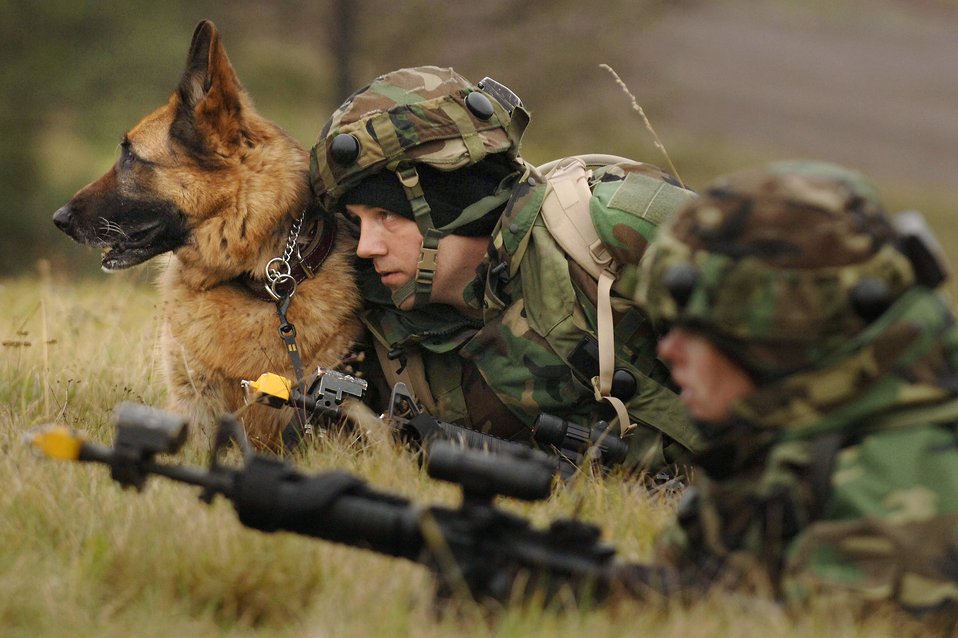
Creek Defender

Staff Sgt. Mark Reidl, his partner Lord, an 8-year-old German Shepherd, and 1st Lt. Kristen Congelosi (foreground) react to